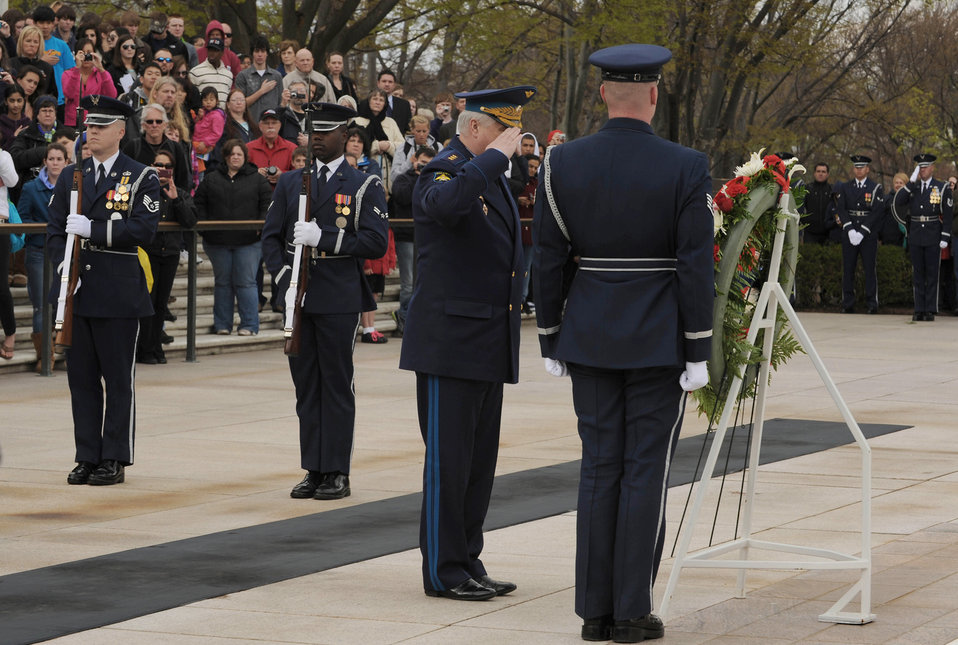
Wreath laying ceremony

Gen. Col. Alexander Nikolyevich Zelin, commander-in-chief of the Russian air force, salutes during a wreath-laying ceremony at the Tomb of the Unknowns April 5, 2011, at Arlington National Cemetery, Va. The wreath was laid in honor of all fallen service members.